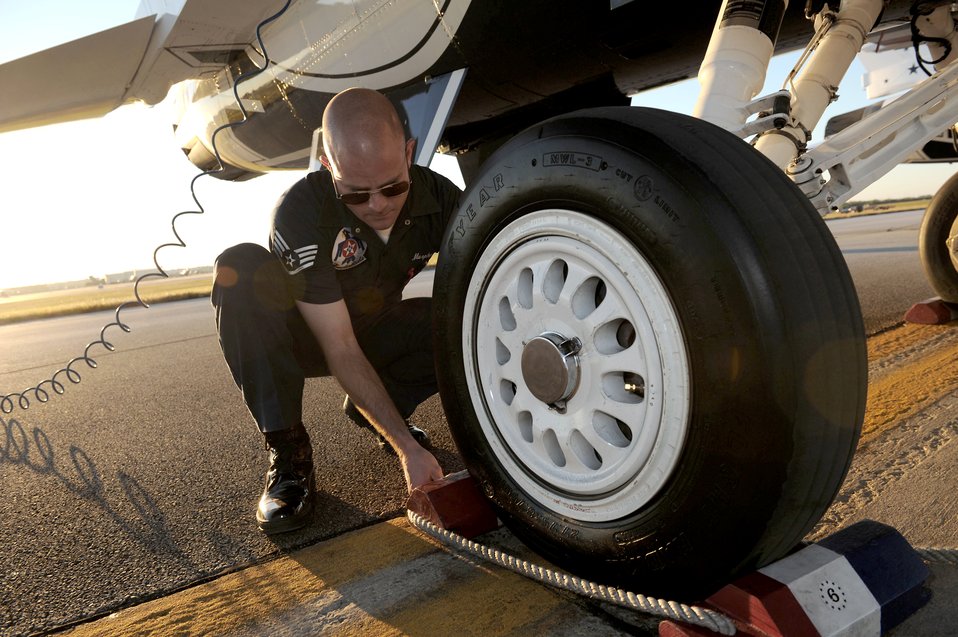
Thunderbirds at Lackland

Staff Sgt. Lance Murphy inspects his jet during post-flight maintenance following the Thunderbirds aerial demonstration at the AirFest 2010 Nov. 7, 2010, at Lackland Air Force Base, Texas. Sergeant Murphy is a Thunderbird crew chief.